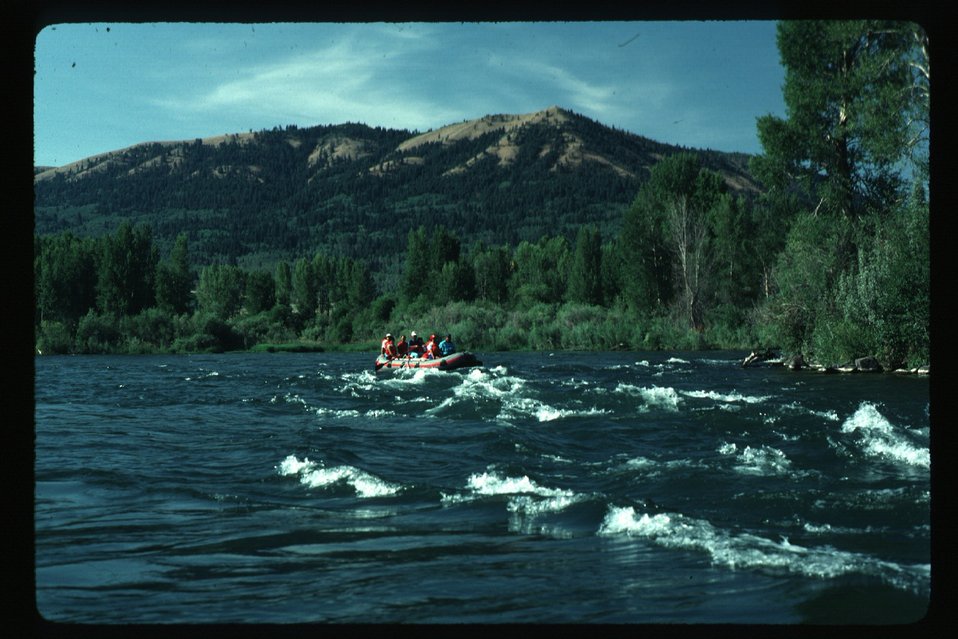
Rafting White water South Fork of Snake River Idaho Falls Field Office USRD Upper Snake River District